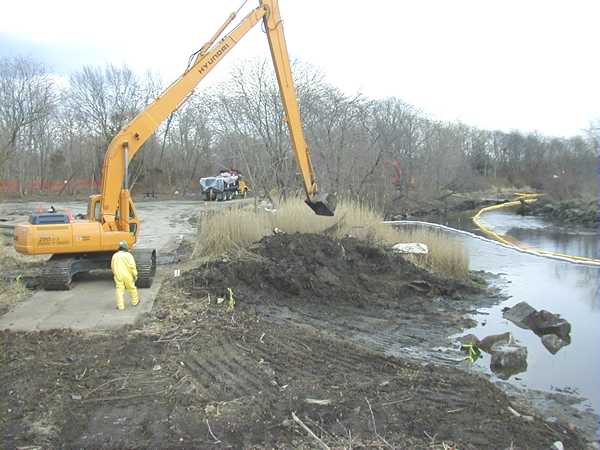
February 2001, Early Action cleanup of PCB contaminated shoreline soils and sediment, Acushnet River, Mass

Some of the highest concentrations of PCBs were found in this area where the Acushnet River first meets New Bedford Harbor.

As a safeguard to the families living along this small area of the Acushnet River, PCB contaminated shoreline soils and sediment were excavated in February and March of 2001, and the area was replanted with native saltmarsh species.